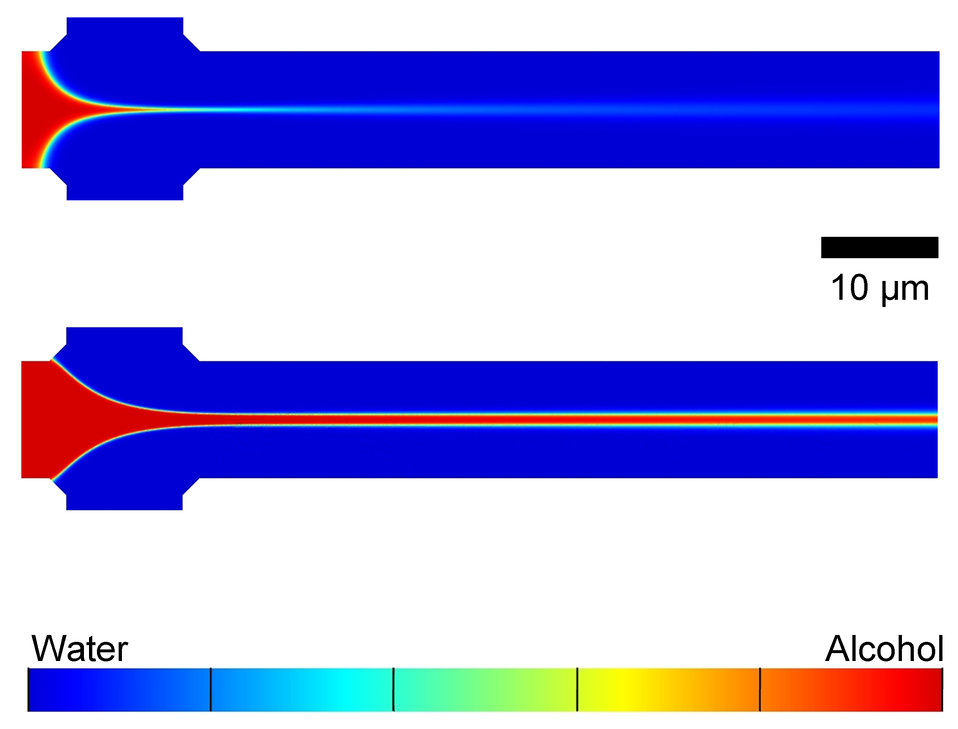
COMMAND microfluidic device

Computer simulations showing the mixing of water and isopropyl alcohol in a COMMAND microfluidic device. The alcohol, which would be mixed with dissolved phospolipids in operation, flows from the left to the right via the center inlet and is focused by water flowing in from the top and bottom inlets. Adjusting flow rates gives a tightly focused stream (top) or broader (bottom), controling liposome size.